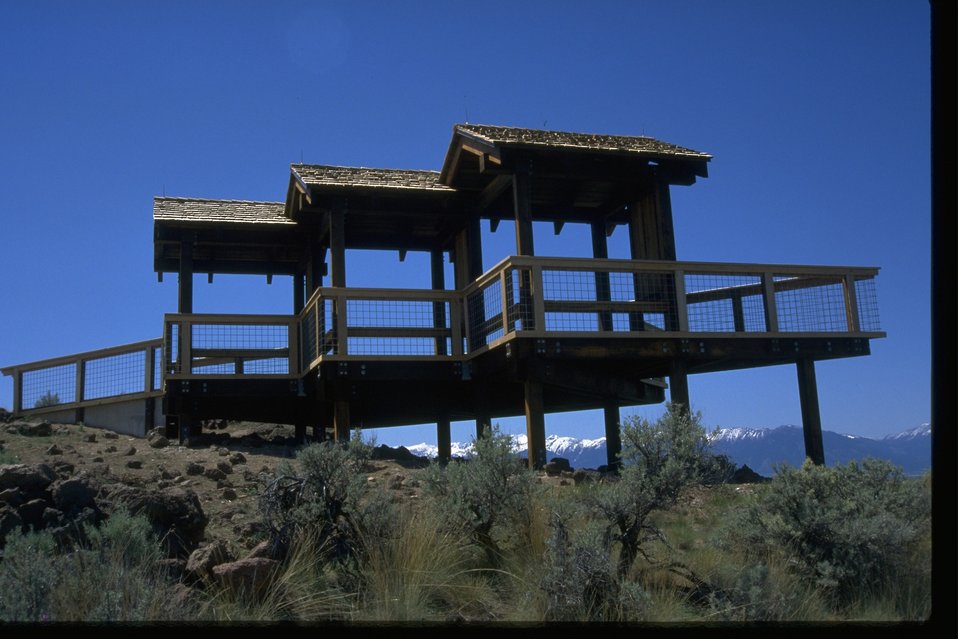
Trail ramada at the NHOTIC.